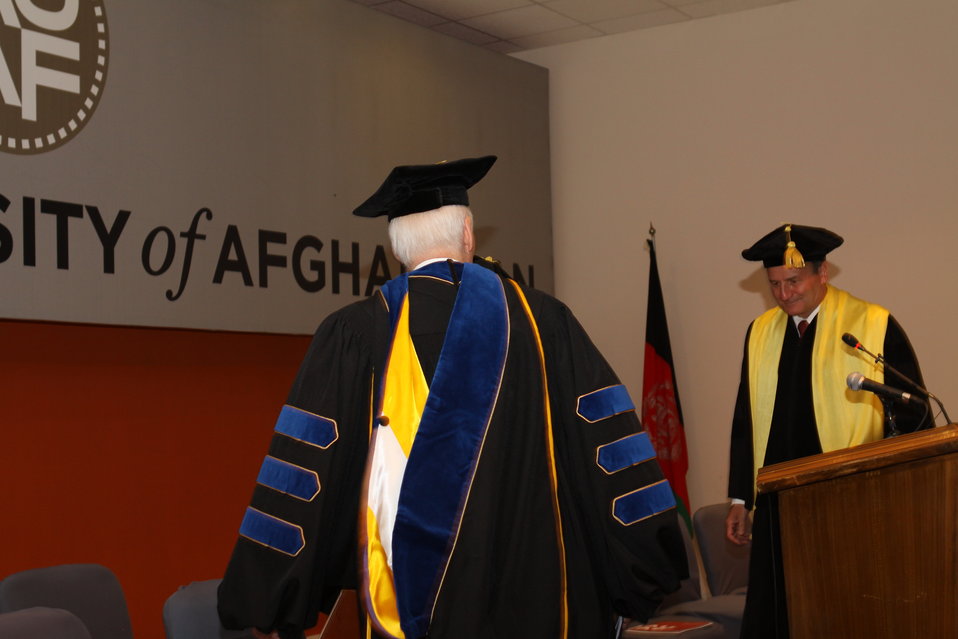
100526 AUAF Graduation 114